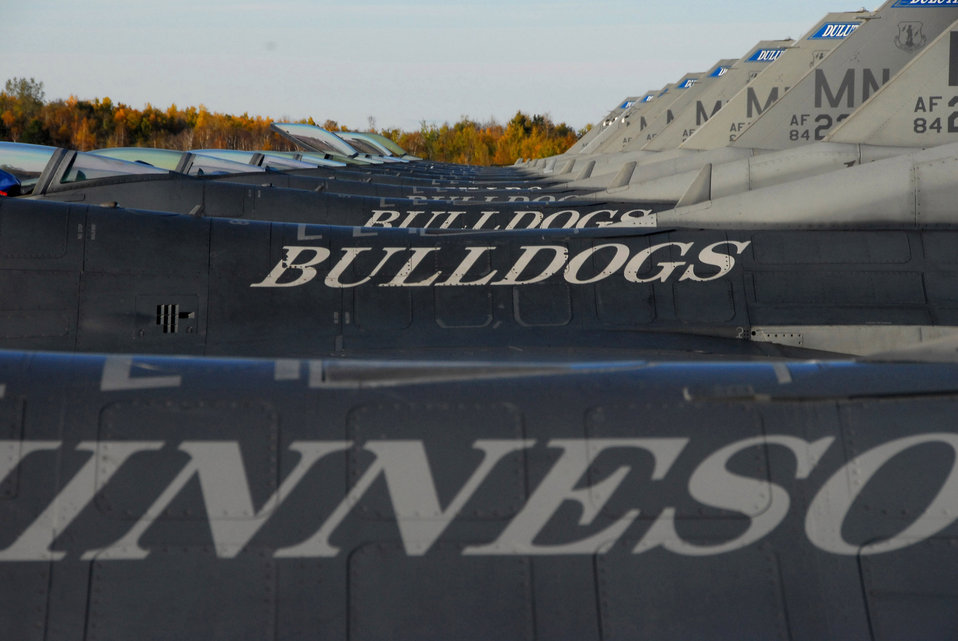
Sun sets on Minnesota Falcons

F-16 Fighting Falcons are parked on the Duluth Air National Guard Base flightline Oct. 13 in Minnesota. The F-16s are assigned to the 148th Fighter Wing in Duluth, Minnesota.